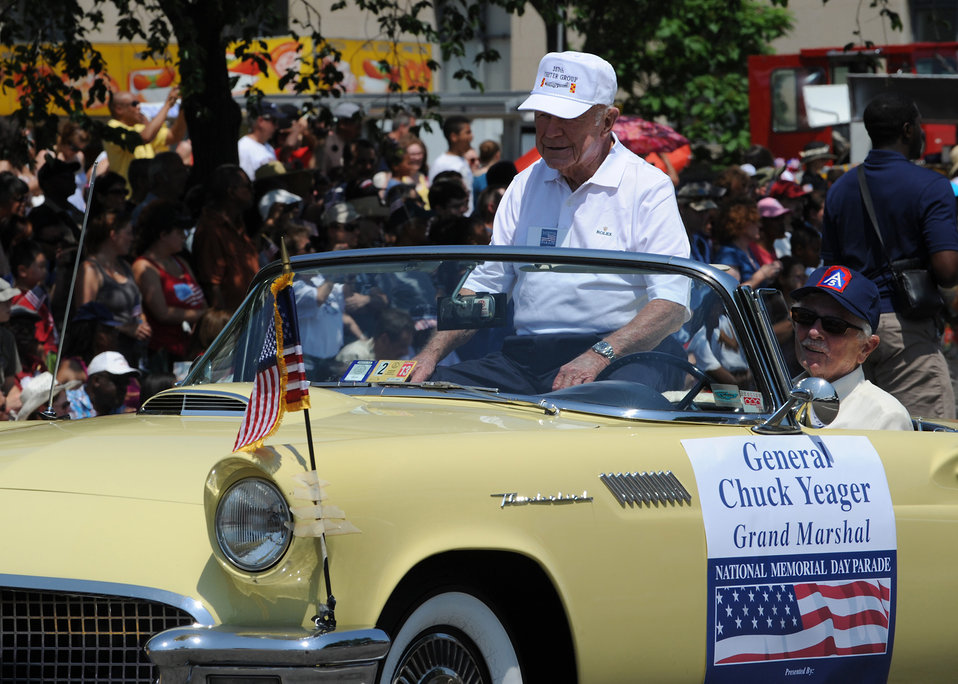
National Memorial Day Parade

Retired Air Force Maj. Gen. Chuck Yeager was the Grand Marshal at the National Memorial Day Parade, May 28, 2012 in Washington D.C. Yeager was the first pilot to break the sound barrier in 1947. The annual National Memorial Day Parade is an opportunity for thousands of patriotic Americans to come together and honor those who have sacrificed so much in service to our country.